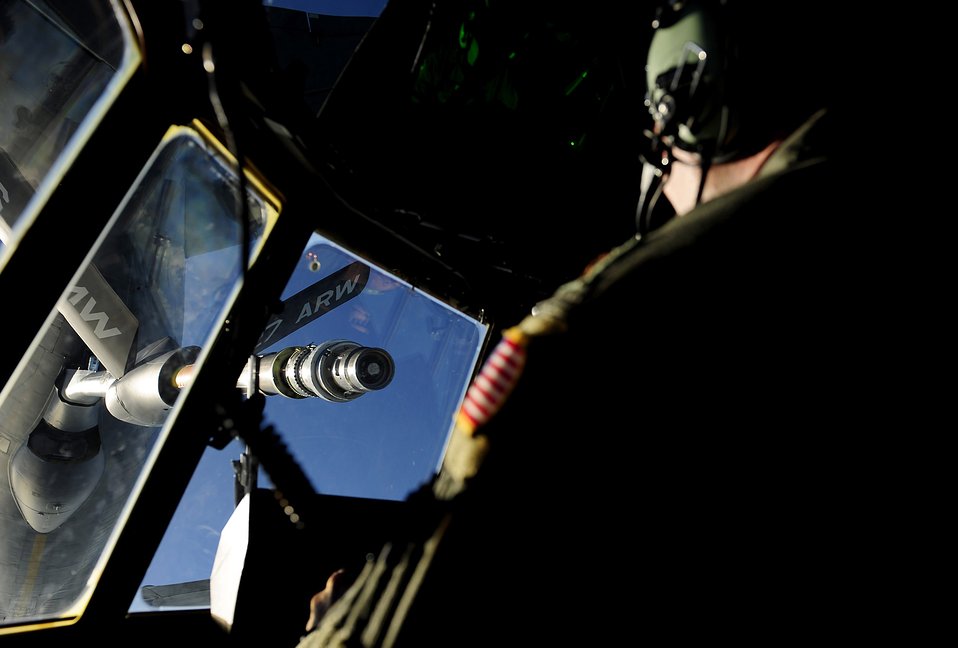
Let's get some fuel

An EC-130J Commando Solo approaches a KC-135 Stratotanker Jan. 30, 2010, during a mission over Haiti. The EC-130J, with the 193rd Special Operations Wing in Middletown, Pa., is a specially-modified transport aircraft and is broadcasting various messages in Creole to provide Haitians with public information.